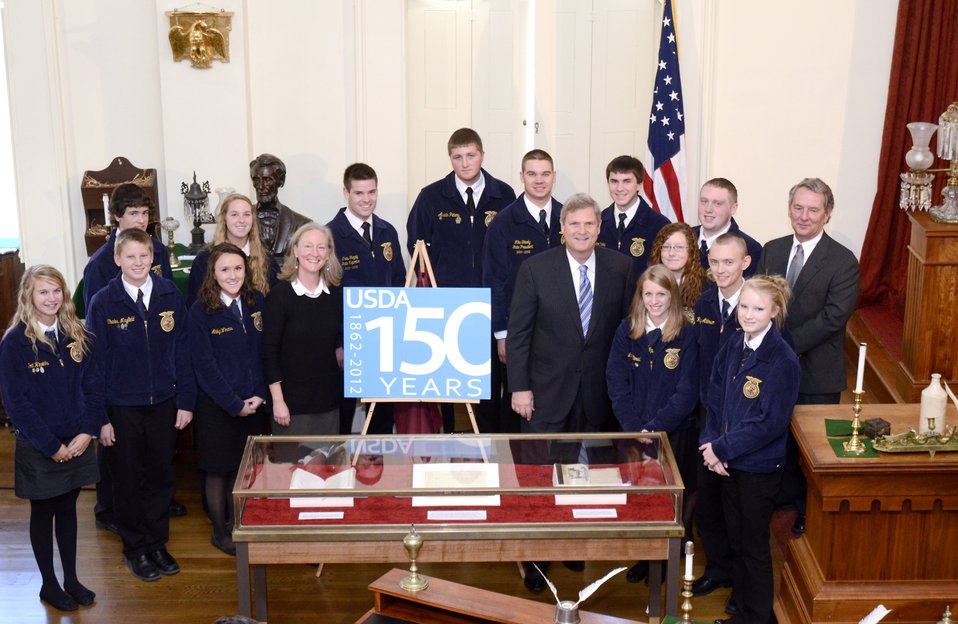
Agriculture Secretary Tom Vilsack (right) and Deputy Under Secretary for Marketing and Regulatory Programs (MRP) Ann Wright (left) unveiled the new graphic to commemorate the 150th Anniversary of U.S. Department of Agriculture in the hometown of its founder President Abraham Lincoln. The event took place at the Old State Capitol in Springfield, IL, on Wednesday, November 2, 2011.